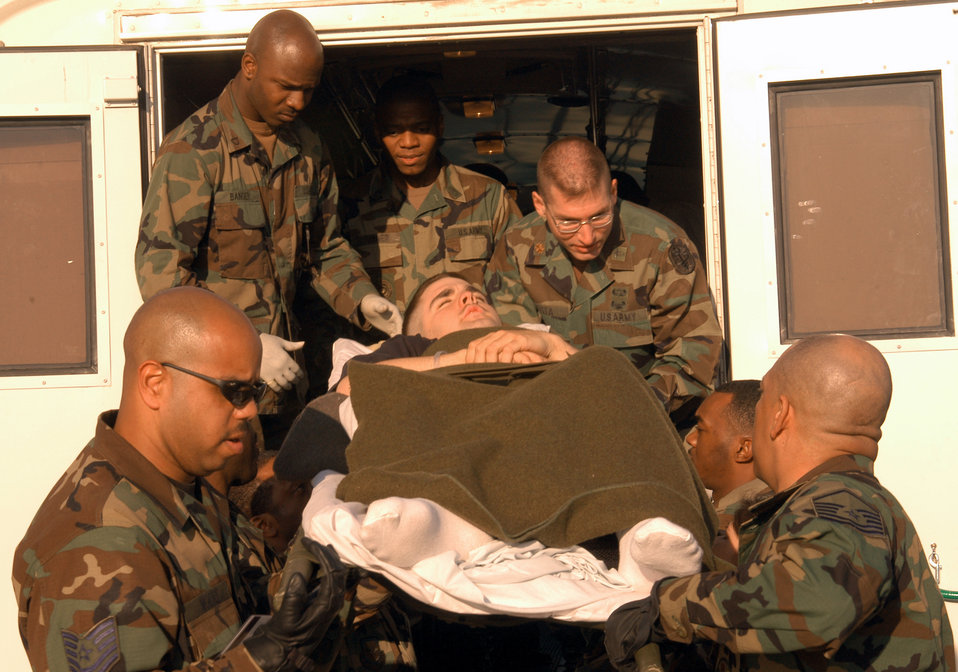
Medivac

ANDREWS AIR FORCE BASE, Md. -- An unidentified soldier is lifted into a medical evacuation bus after arriving here from Ramstein Air Base, Germany on April 12.